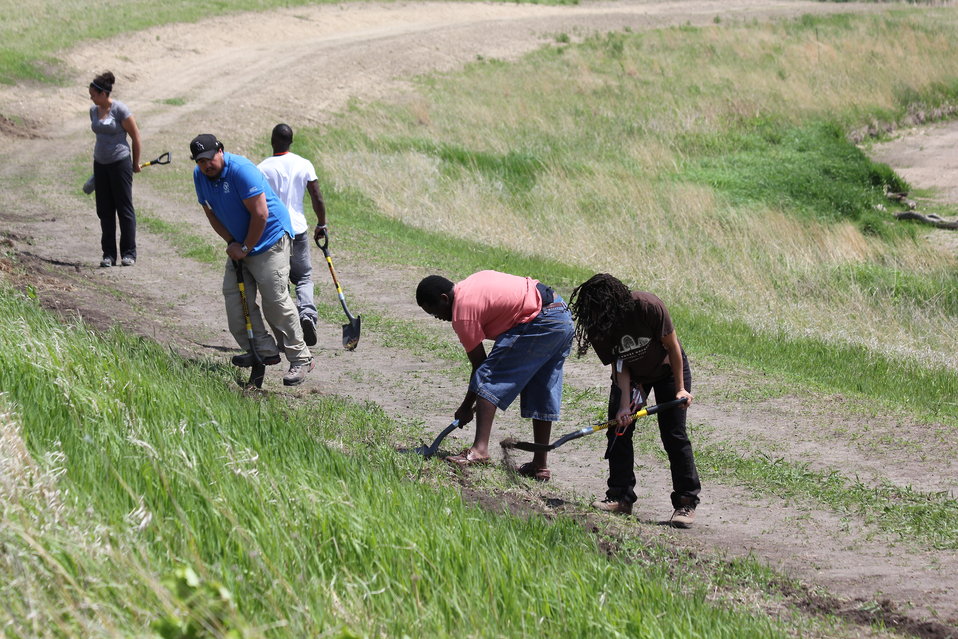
CDIP 2012 Fergus Falls

Preparing the soil...